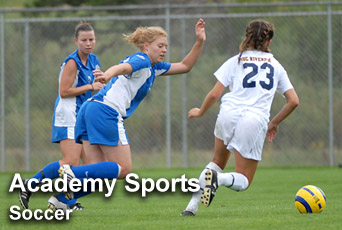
Academy sports: Soccer

For up-to-date scores on all U.S. Air Force Academy sports, visit their Web site at www.goairforcefalcons.com.